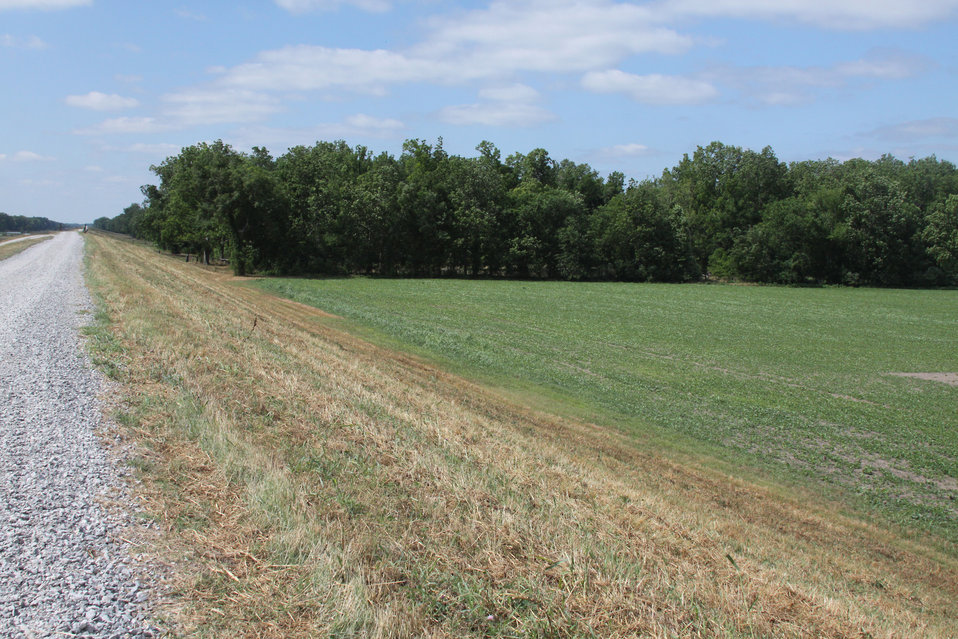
A soybean field before floodwaters inundated the field in Pointe Coupee Parish, LA, on Saturday, May 14, 2011.